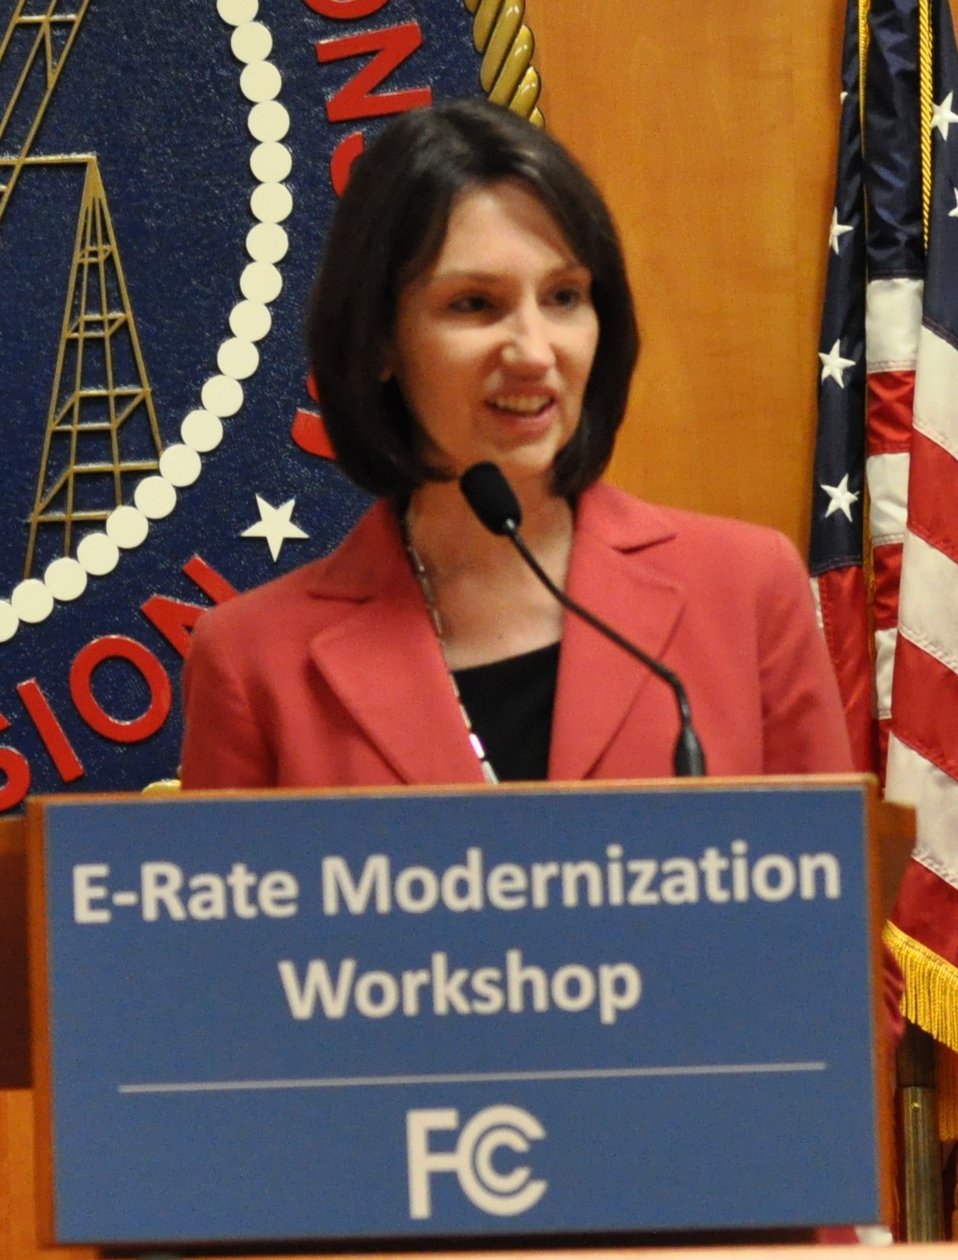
5.6.2014 E-Rate Modernization Workshop

Concluding Remarks from Julie Veach, Chief, Wireline Competition Bureau, FCC